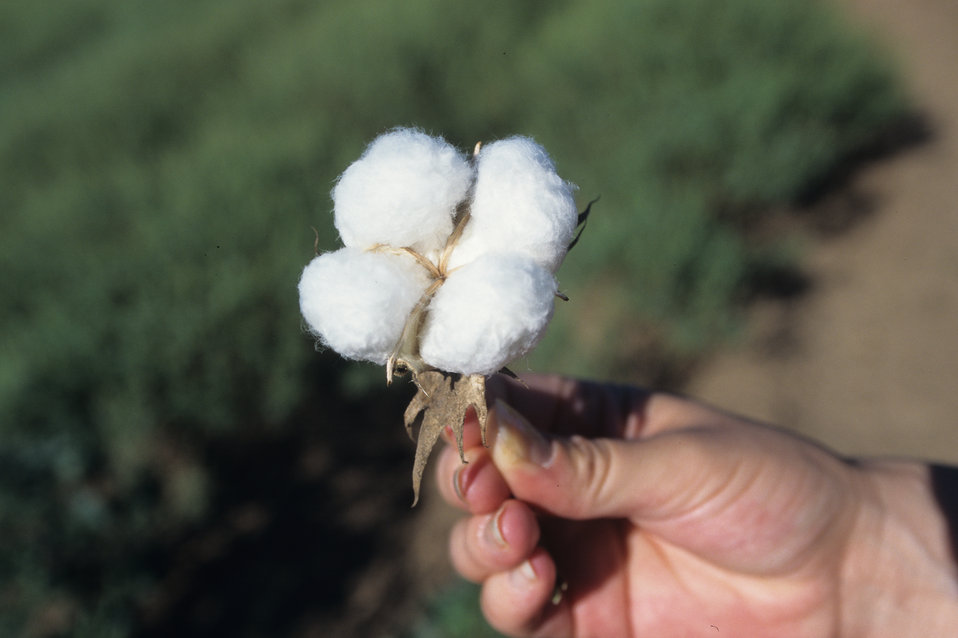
Cotton farme holds a cotton boll harvested from a cotton field in TX on September 2, 1996.